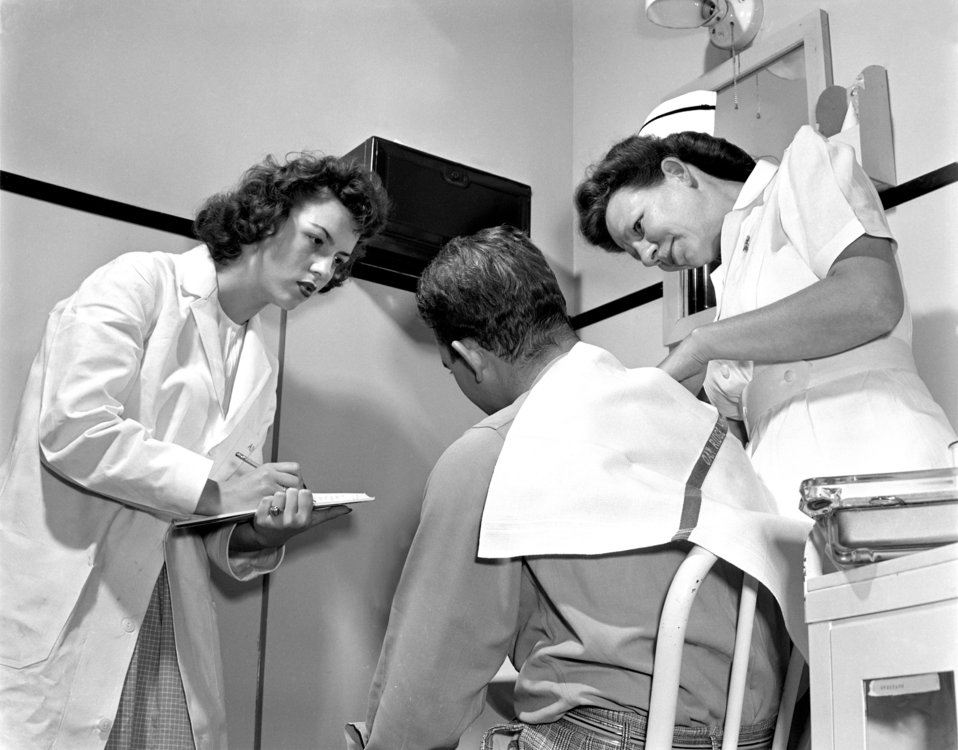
Emergency Admittage Office Hospital Oak Ridge 1947

3452-3a DOE photo Ed Westcott 5-9-1947 Oak Ridge Tennessee